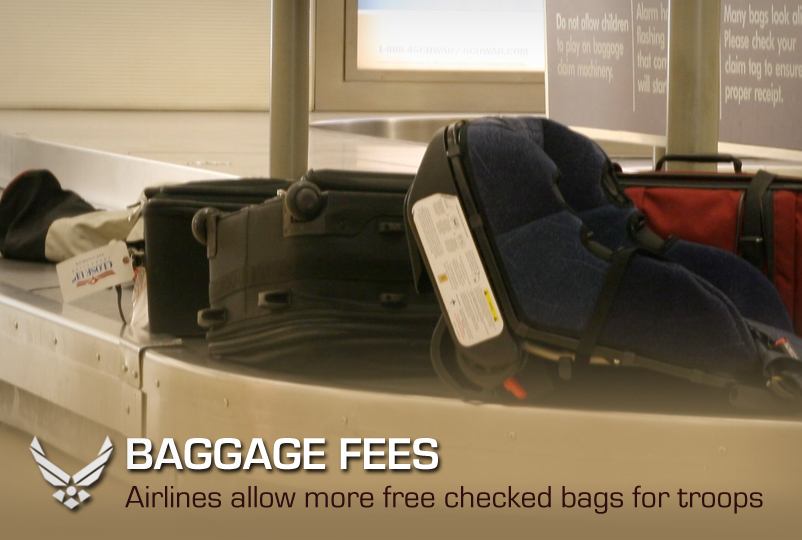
Baggage Fees